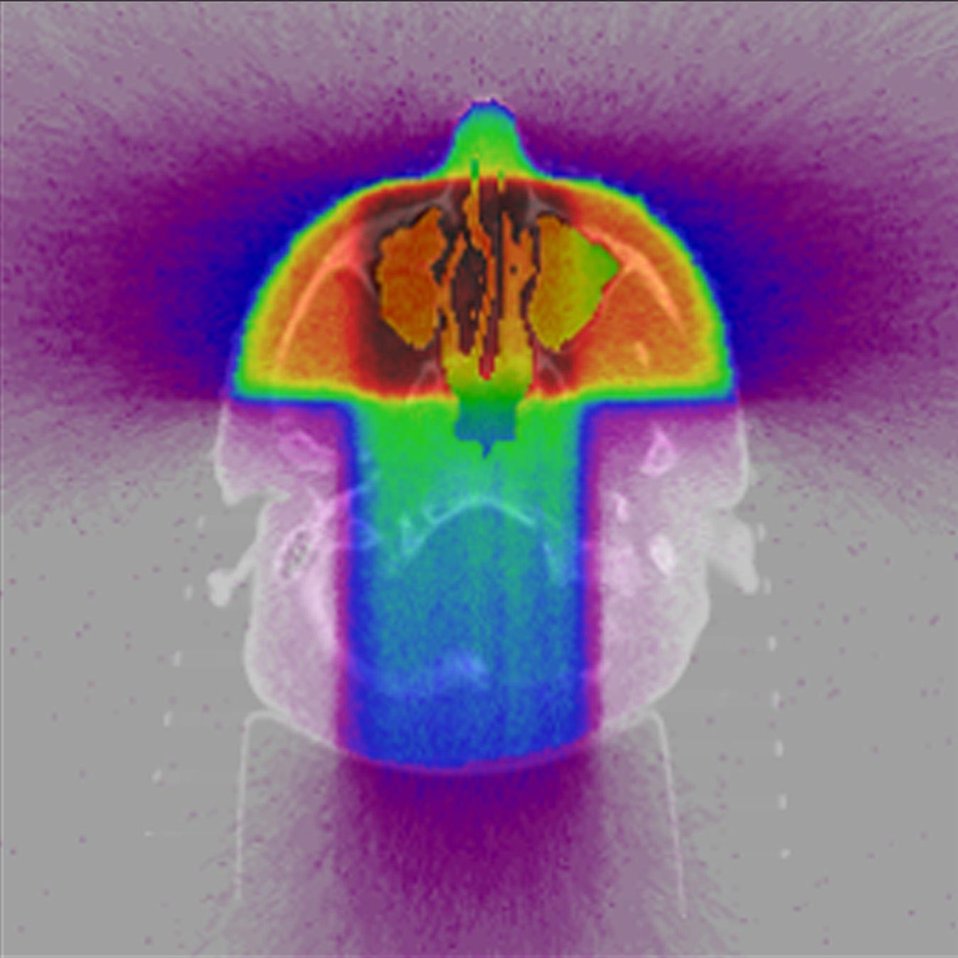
GRAPHIC OF A SLICE OF 3D MONTE CARLO BASED PEREGRINE DOSE CALCULATION SUPERIMPOSED ON PATIENT'S CT IMAGE AND COLOR CODED.

PEREGRINE IS A 3D MONTE CARLO DOSE CALCULATION SYSTEM DESIGNED SPECIFICALLY FOR RADIATION THERAPY PLANNING. PEREGRINE ACCURATELY MODELS THE RADIATION BEAM DELIVERY SYSTEM FOR EACH PLANNED TREATMENT AND USES EACH PATIENT'S CT SCAN FOR DETAILED INFORMATION ABOUT THE TUMOR AND SURROUNDING TISSUE.